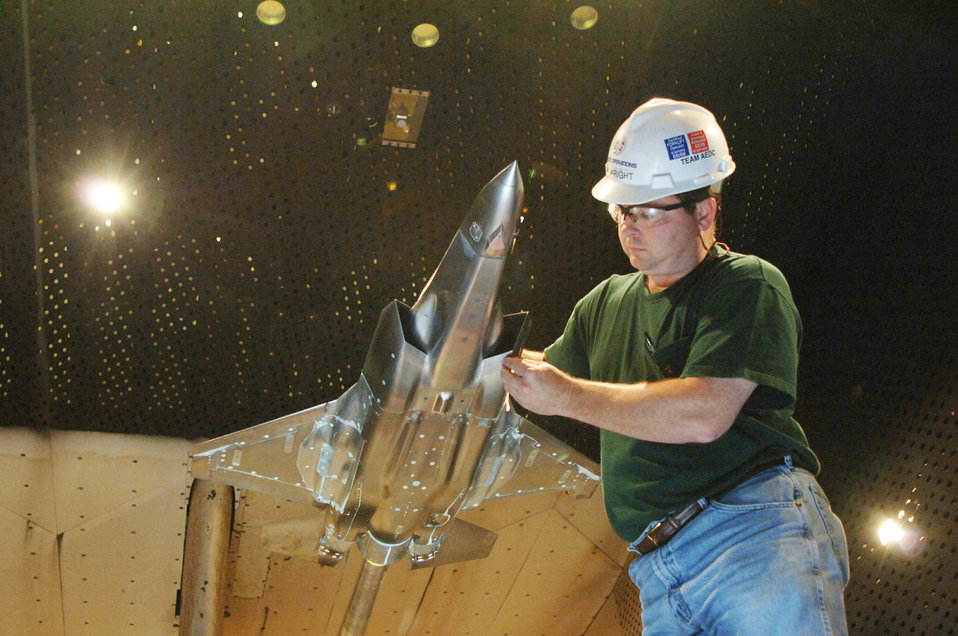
F-35 Lightling II Joint Strike Fighter initial flight

Tim Wright examines an F-35 LIghtning II Joint Strike Fighter model in the Arnold Engineering Development Center's 16-foot transonic wind tunnel at Arnold Air Force Base, Tenn. The information from testing will go into a database to refine and validate the aircraft designs for flight testing.